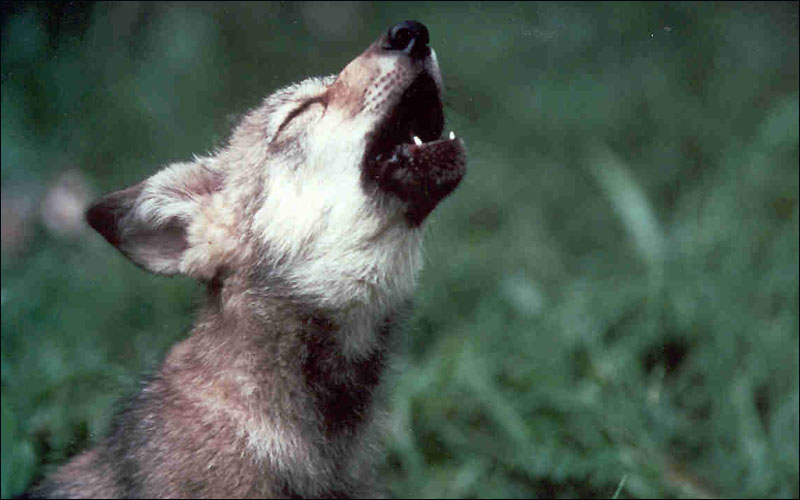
mexican wolf pup